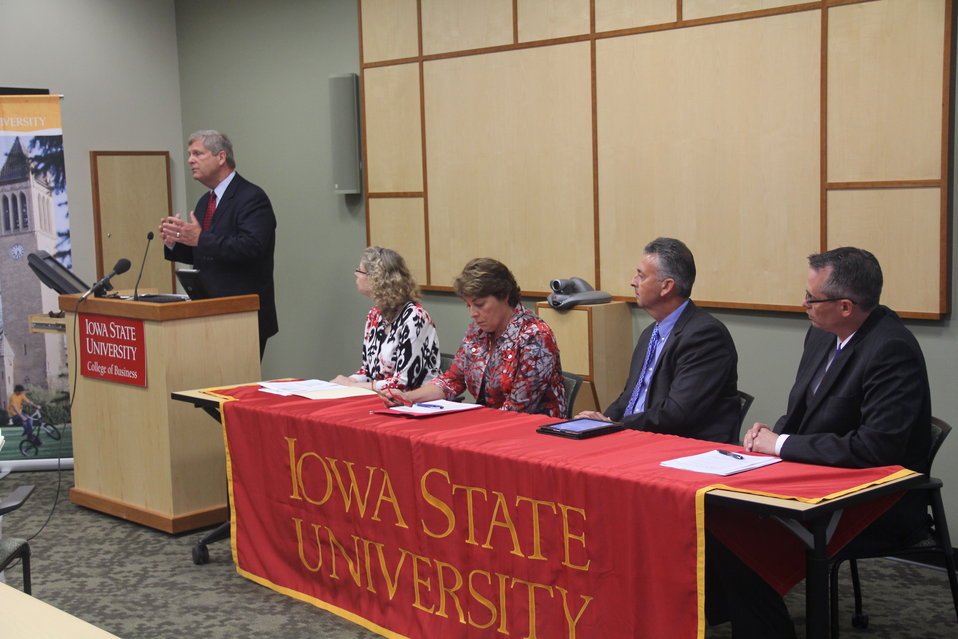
Agriculture Secretary Tom Vilsack hosts a roundtable discussion on immigration reform at Iowa State University in Des Moines, IA on Friday, Aug. 30, 2013. (L to R Agriculture Secretary Tom Vilsack, Iowa State University College of Agriculture and Life Sciences Dean Dr. Wendy Wintersteen, DuPont Pioneer corporate counsel Helen Adams, Ollie, IA dairy farmer Rob Wonderlich, and Greater Des Moines Partnership Chief Executive Officer Jay Byers)